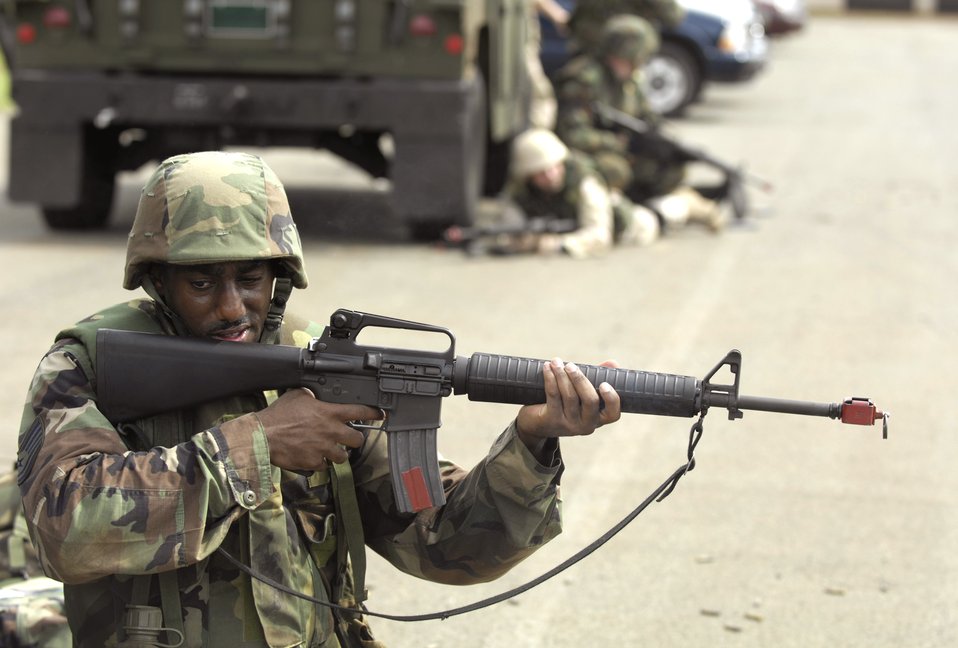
Combat course prepares Airmen for AEF

An Airman from the 15th Airlift Wing returns fire during convoy training Nov. 3 at a 3-day Expeditionary Combat Skills training course at Hickam Air Force Base, Hawaii. The Airmen are preparing for for the Air Expeditionary Force 5/6 cycle.